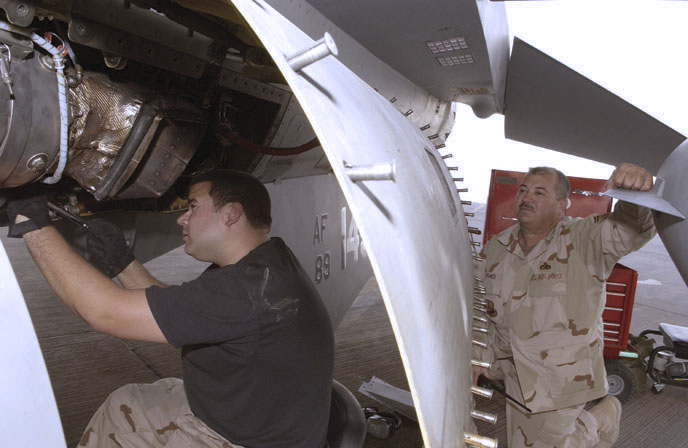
379th AMU fighter maintenance family affair

SOUTHWEST ASIA -- Staff Sgt. Joe Franco (left) repairs an F-16 Fighting Falcon while his father, Senior Master Sgt. Joe Franco, supervises. The father and son are assigned to the 379th Expeditionary Aircraft Maintenance Squadron at a forward-deployed location and are from the Oklahoma Air National Guard's 138th Fighter Wing.